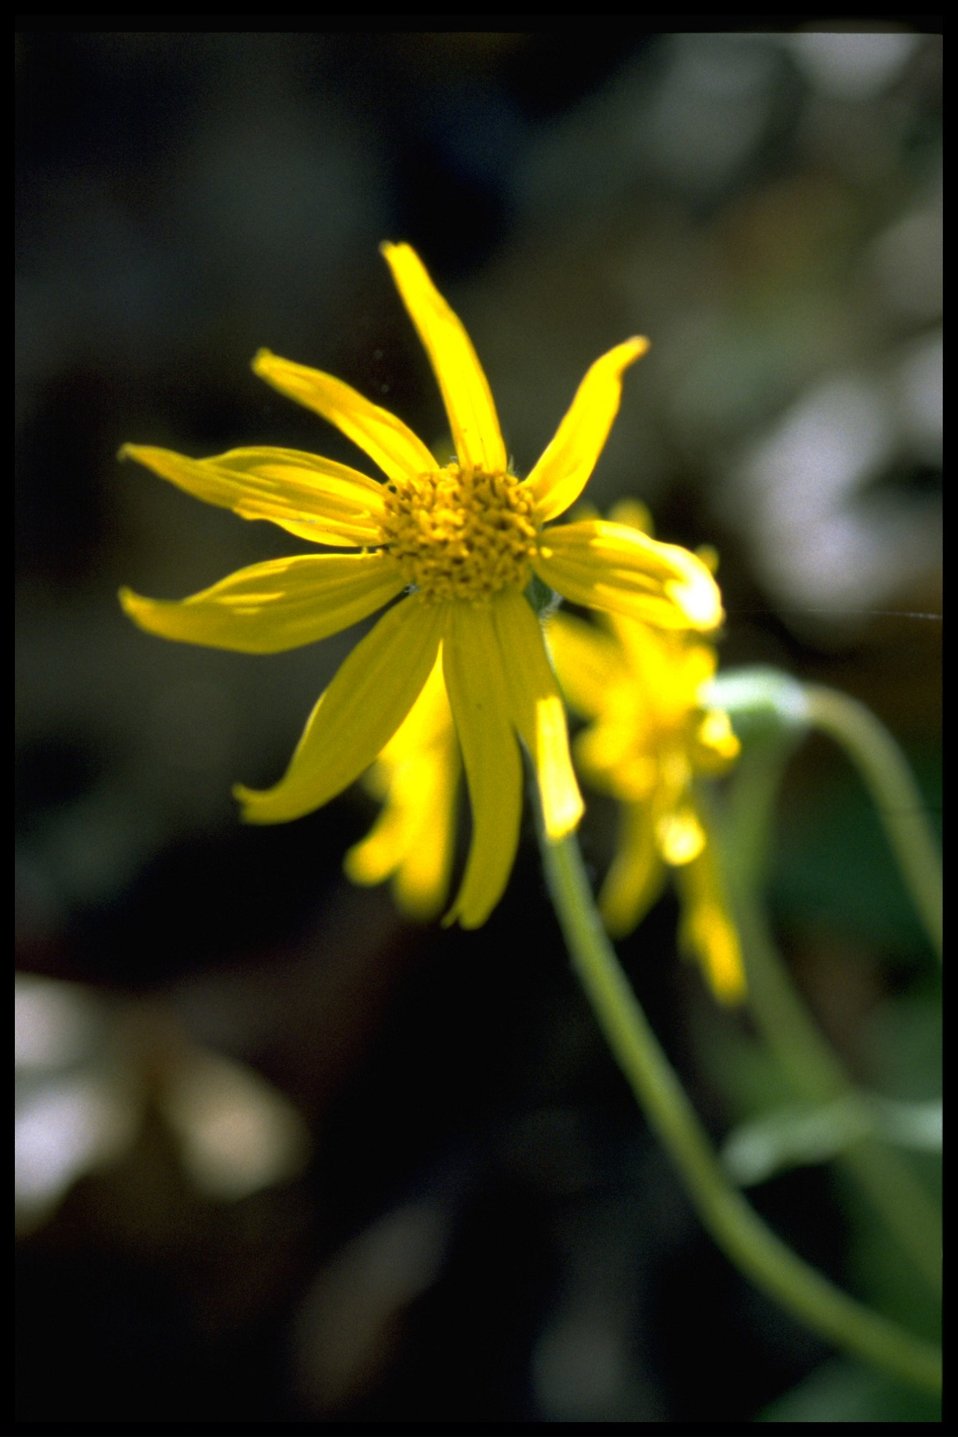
Closeup shot of Amica.